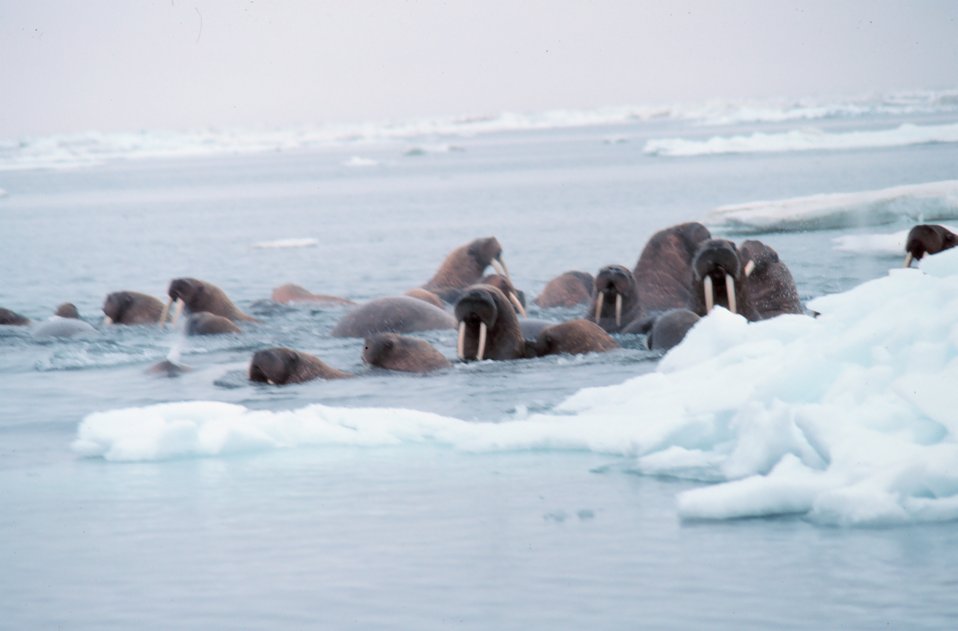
Walrus - Odobenus rosmarus divergens - hauled out on Bering Sea ice.